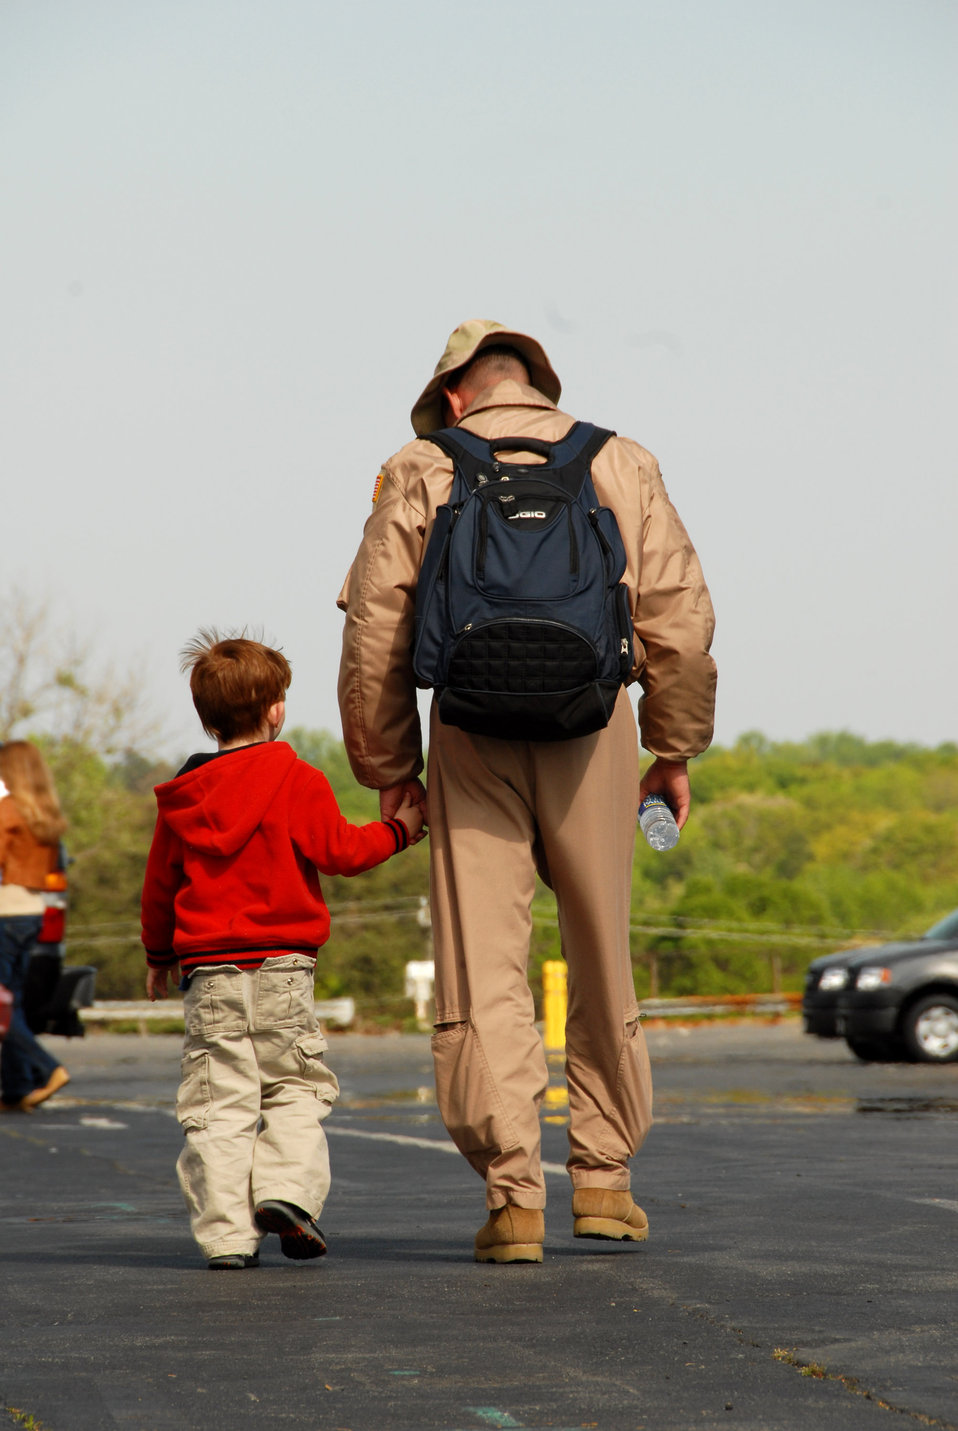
Nothing can be finer than to be in Carolina

Maj. Kevin Mountcastle walks with his son after arriving back home April 6 from supporting Operation Enduring Freedom to Charlotte, N.C. Major Mountcastle is a C-130 Hercules pilot assigned to the 145th Airlift Wing for the North Carolina Air National Guard, and is returning from a tour of duty in Afganistan.